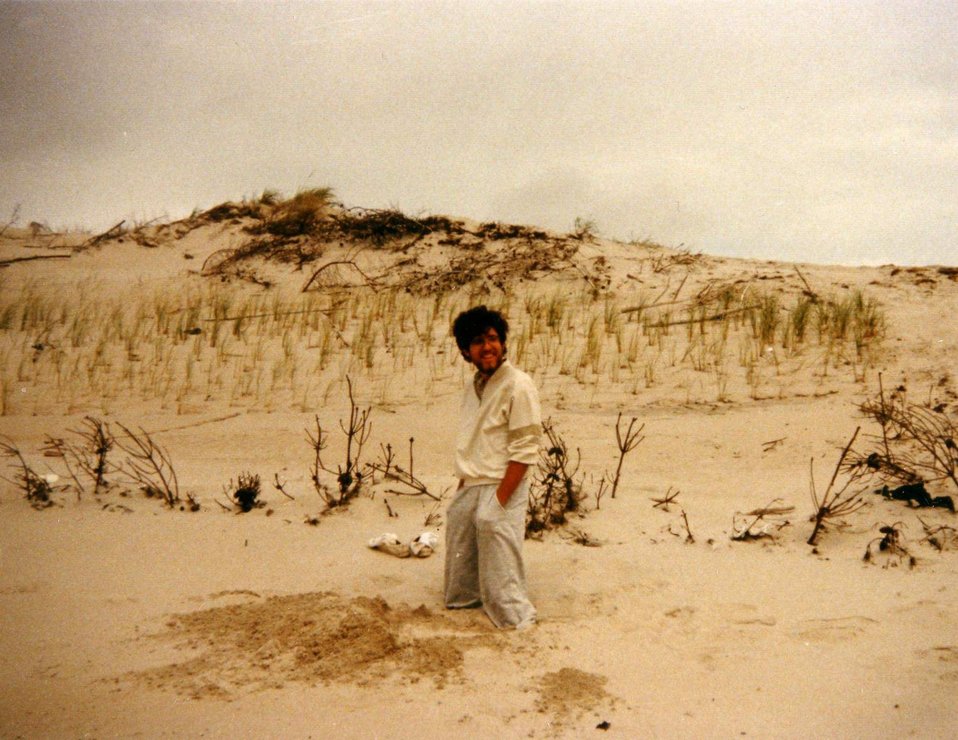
(pl) Alfisti gd - polski wikipedysta